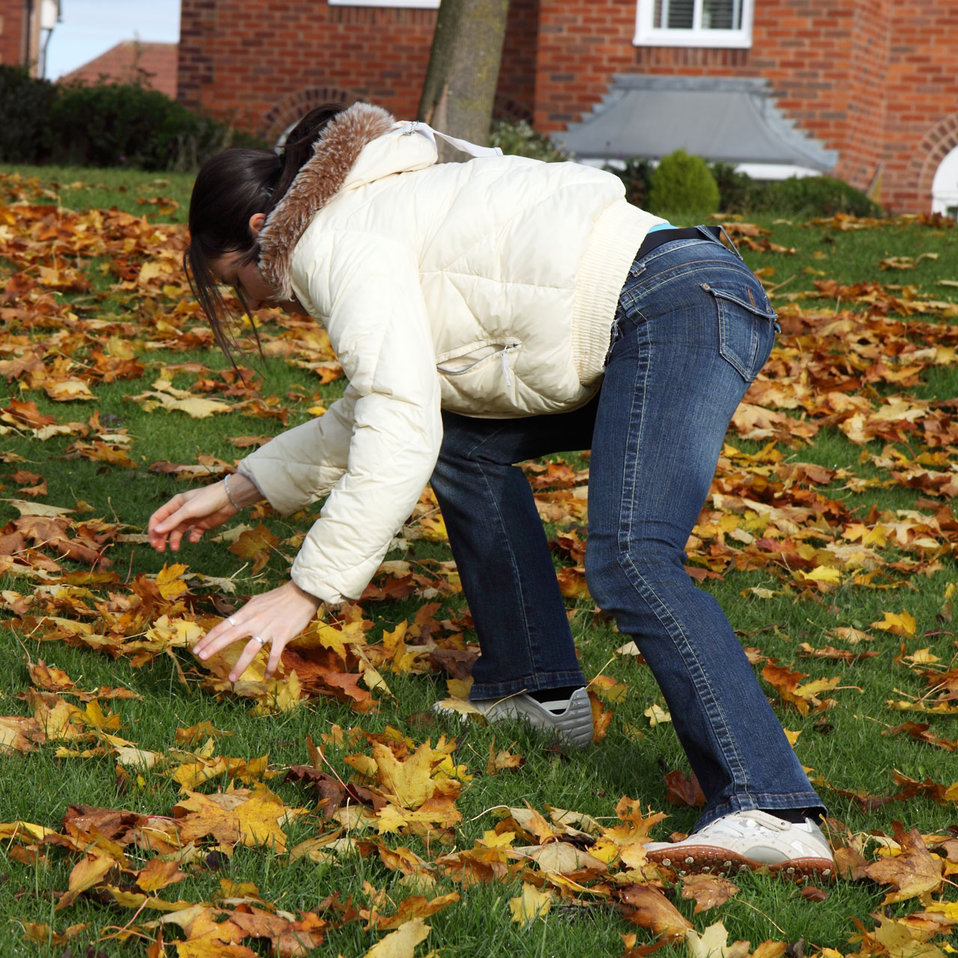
Girl in autumn

A girl picking leaves in autumn.